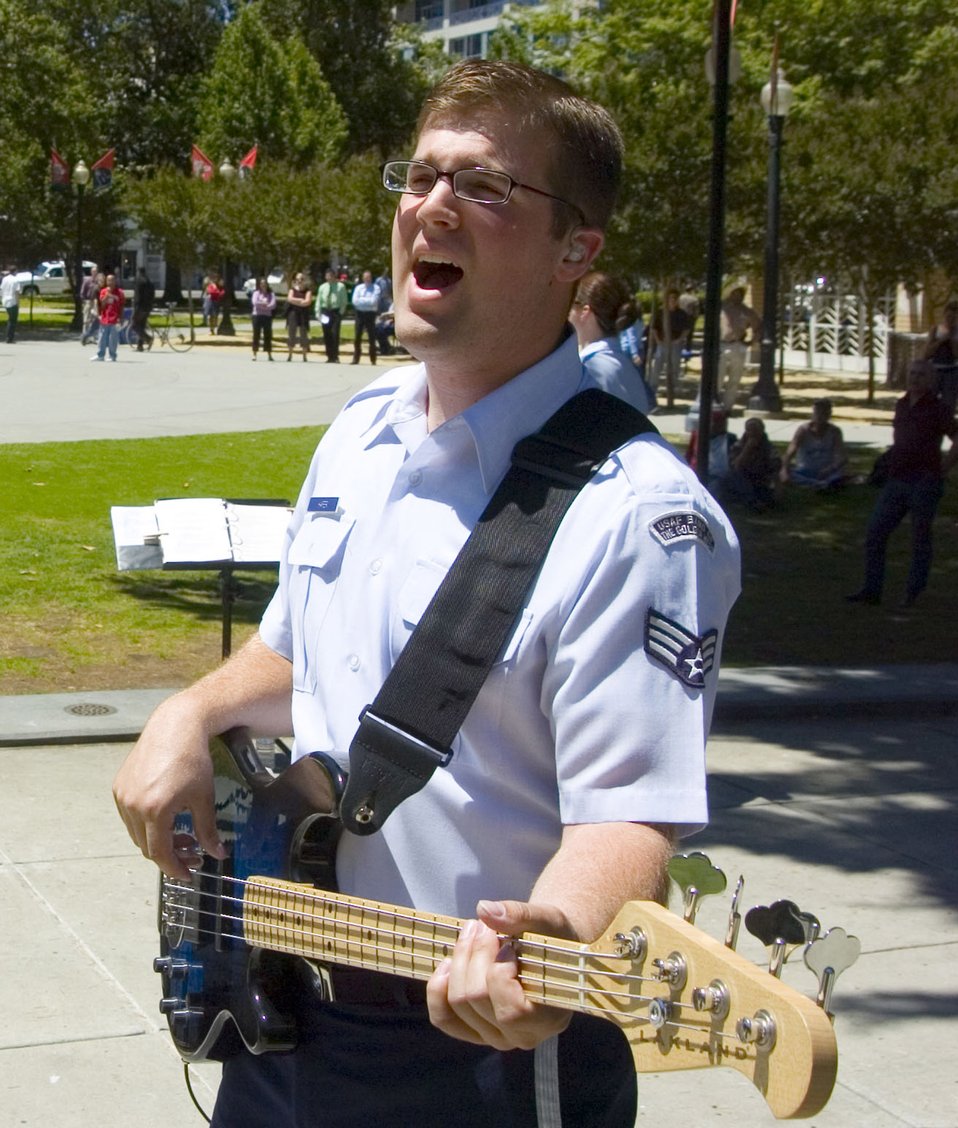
Band of the Golden West rocks downtown Sacramento

Senior Airman Jason Hafer performs with the Air Force Band of the Golden West from Travis performs in the Cesar Chavez Plaza as part of Air Force Week June 7 in Sacramento, Calif. This was his final performance with the band.